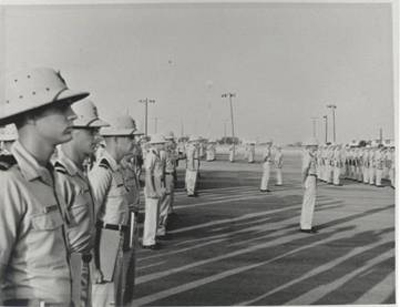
OTS 50th Anniversary

Air Force Officer Training School is celebrating its 50th Anniversary. OTS first opened its doors at Lackland Air Force Base, Texas, in 1959 with a class of 89 trainees. During the past 50 years, OTS officials have trained and commissioned more than 100,000 men and women who have answered their nation?s call and served in peace and war with the motto??Always with Honor.?